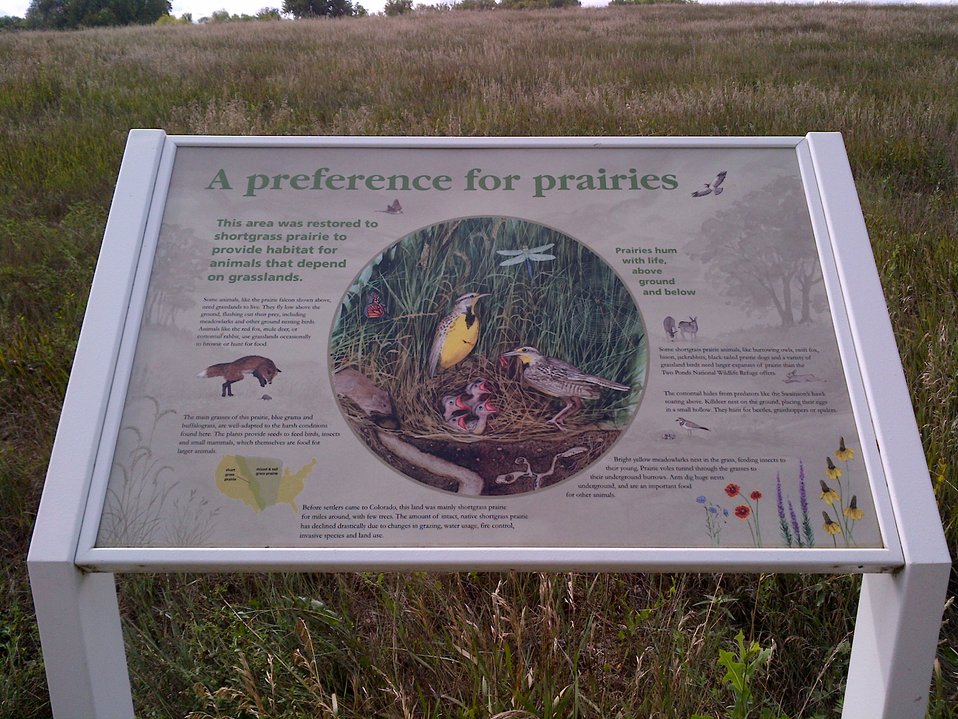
Sign - Prairie Ecosystems